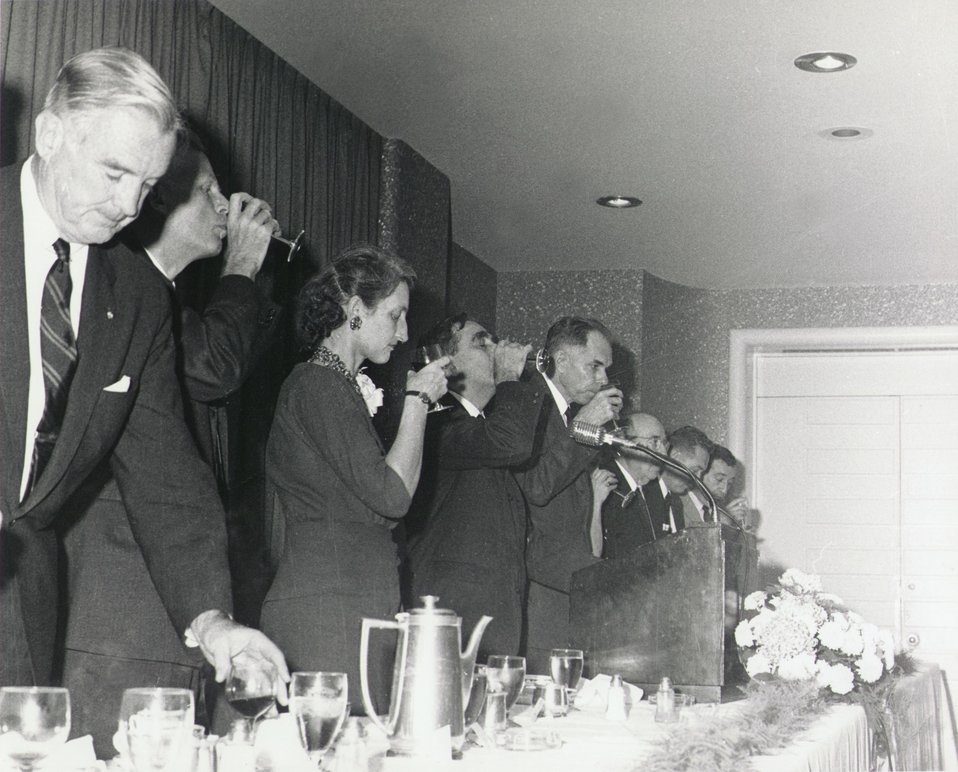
Fermi Award Ceremony for Teller in 1962.